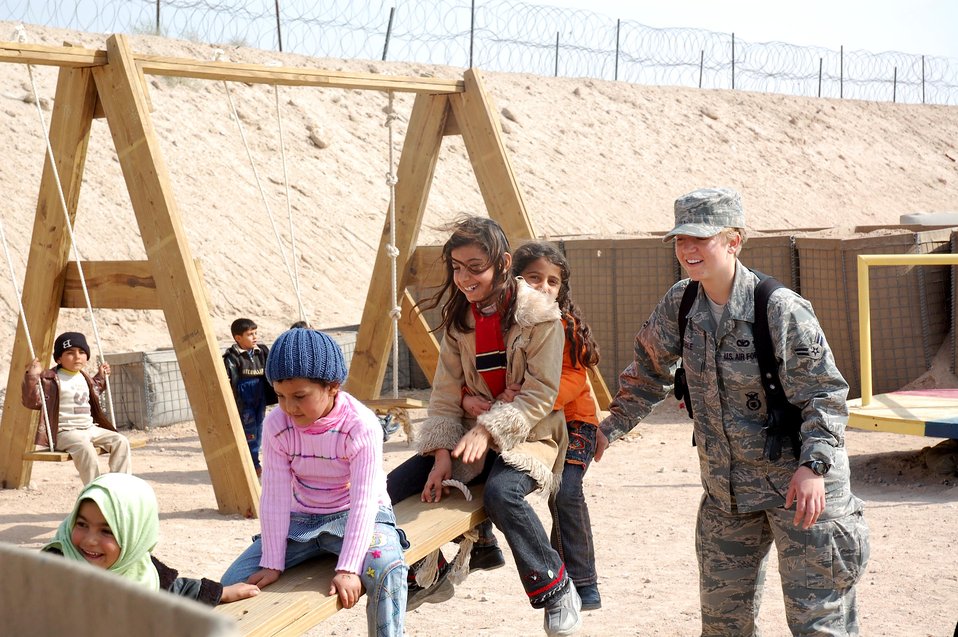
Airmen perform unique missions in Iraq

Airman 1st Class Sarah Coble plays with children Feb 10 who are visiting family and friends detained in the Theater Internment Facility at Camp Bucca, Iraq. Airmen deployed to the 886th ESFS operate the TIF's vigorous visitation program which houses detainees determined to be a security threat against Iraqi citizens or coalition forces. More than 1,700 friends and family members visit the detainees each week. Airman Coble is a 886th Expeditionary Security Forces Squadron member deployed from Keesler Air Force Base, Miss.